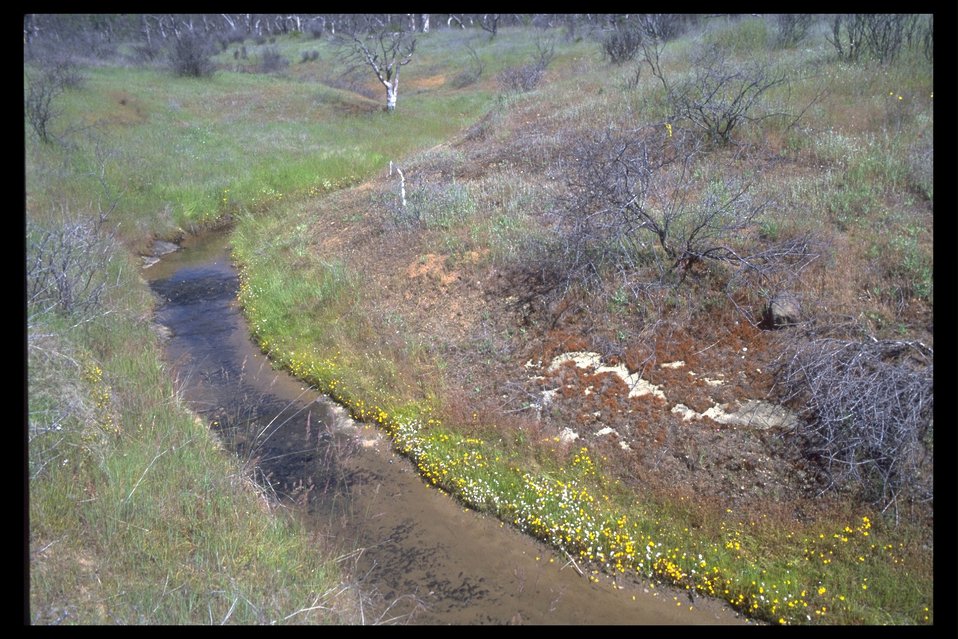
A creek near Meadows Road in Sam's Valley. showing rare Popcorn Flower (Plagiobothrys figuratus).